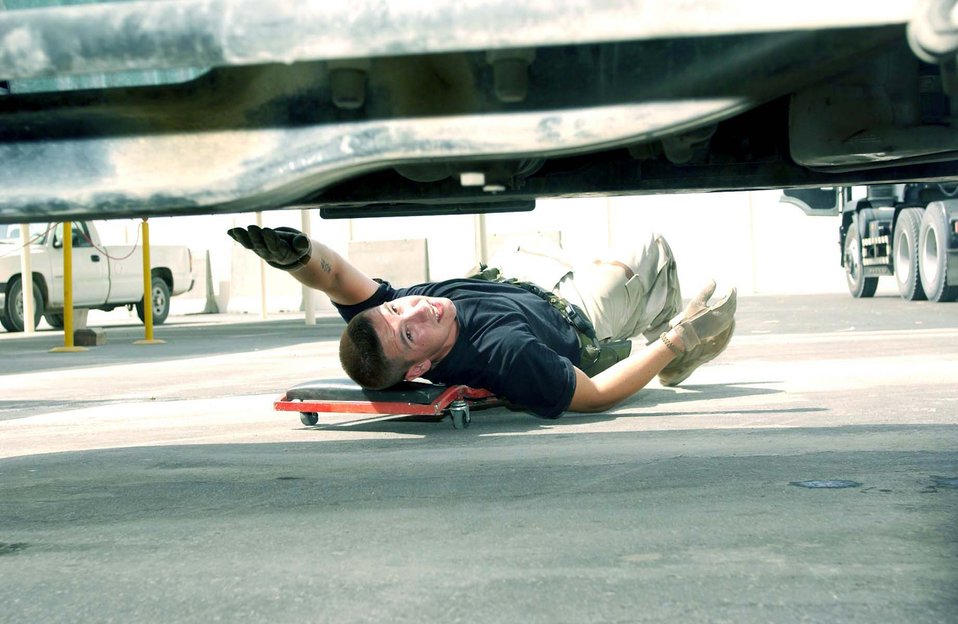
Teamwork provides best security

SOUTHWEST ASIA -- Airman Benjamin Wilson inspects a fuel truck coming through the vehicle search area. Security forces Airmen inspect all vehicles that enter the base including a search with military working dogs. Airman Wilson is assigned to the 380th Expeditionary Security Forces Squadron at a forward-deployed location.